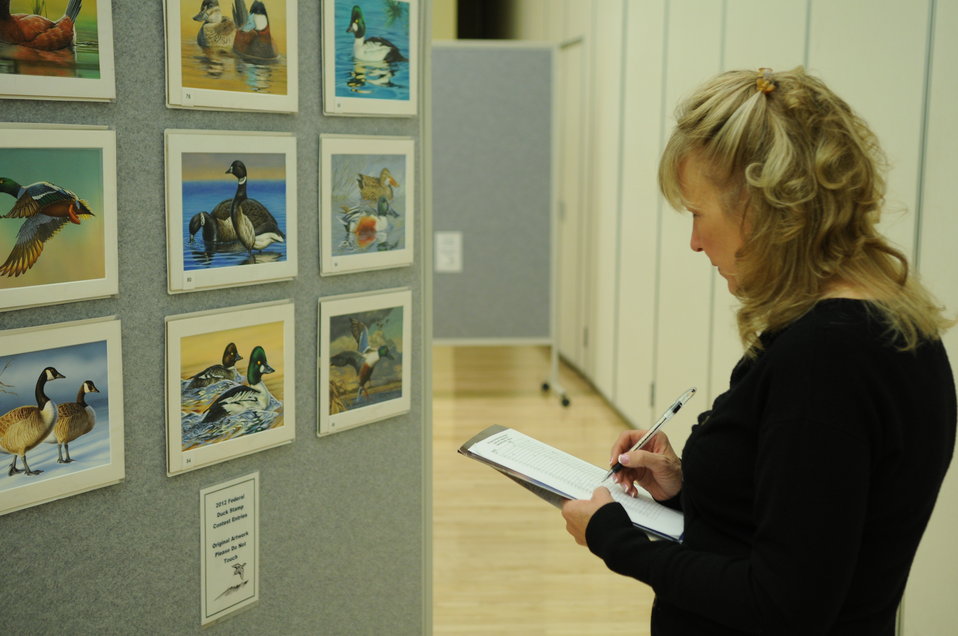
Judging

The U.S. Fish & Wildlife Service sponsored the 2012 Federal Duck Stamp Art Contest September 28 and 29 in Ogden, Utah, at Weber State University. A panel of five judges was responsible for choosing the art work used to design the 2013-2014 Migratory Bird Hunting and Conservation Stamp.